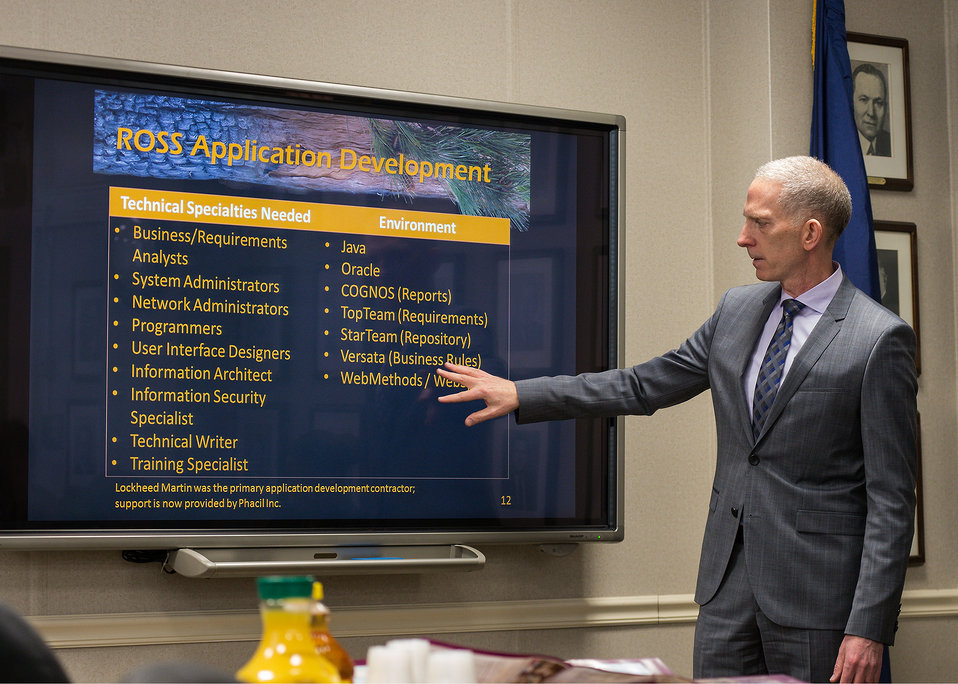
Doug Nash, Forest Service, Chief Information Officer discussed the Fire Mission Resource Ordering and Status System (ROSS) to students from Thomas Jefferson High School of Science and Technology in Alexandria, VA during the U.S. Department of Agriculture (USDA), Office of the Chief Information Officer (OCIO) IT Job Shadow Day, Tuesday, Mar. 25, 2014. The OCIO IT Job Shadow Day hosts students from local high schools in the Washington, D.C. area annually with IT professionals and agricultural specialists from a variety of mission areas at USDA.